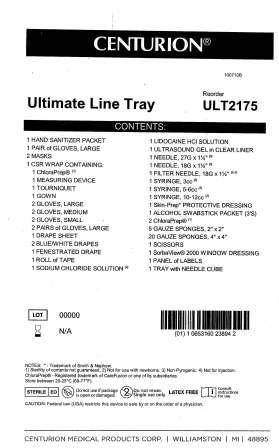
RECALLED - Convenience kits which contain bacteriostatic sodium chloride solution by American Regent

April 1, 2011 - Product Recall - Centurion Medical Products Initiates Voluntary Recall of Customized Convenience Kits (including select Central Venous Catheter, PICC Insertion, and VAD Trays) that contain American Regent’s Bacteriostatic Sodium Chloride Injection, USP, 0.9% 30 mL Multiple Dose Vials.